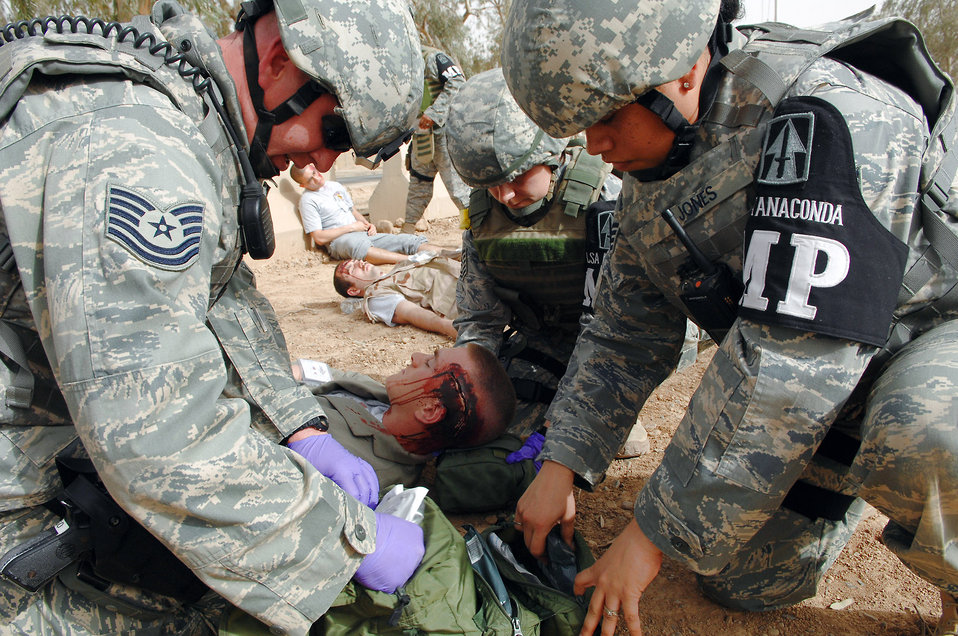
Worst case scenario

Airmen and Soldiers work together to provide critical self-aid and buddy care to a simulated patient during a mass casualty battle drill March 31 at Balad Air Base, Iraq. The battle drill tested the ability of base members to respond and react to a mass casualty. During the battle drill, personnel were required to interact with sister servicemembers and contractors to coordinate assets, move patients and execute procedures.